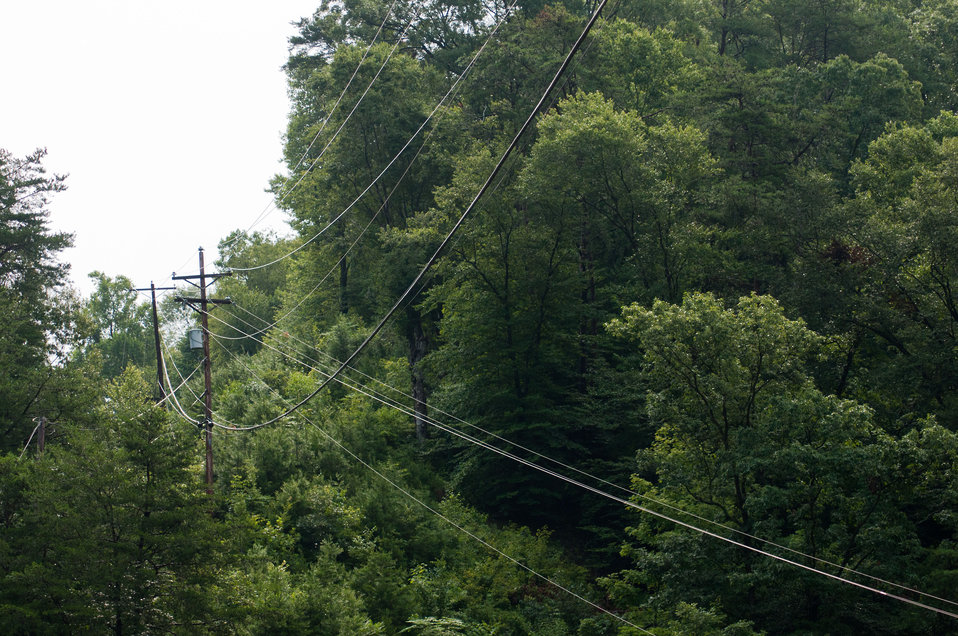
Power and communications lines between Lexington and Pikeville, KY, on Tuesday July 12, 2011. This is the Eastern Kentucky region of the Appalachian Mountains.